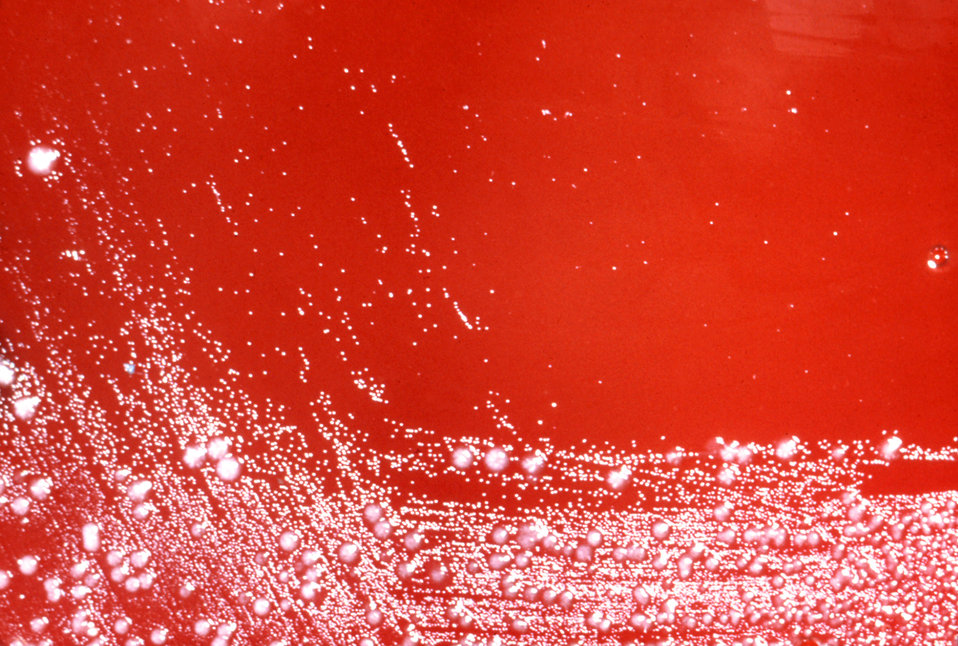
Here F. mortiferum and C. perfringens grew on PEA agar with inhibition of E. coli and P. vulgaris.